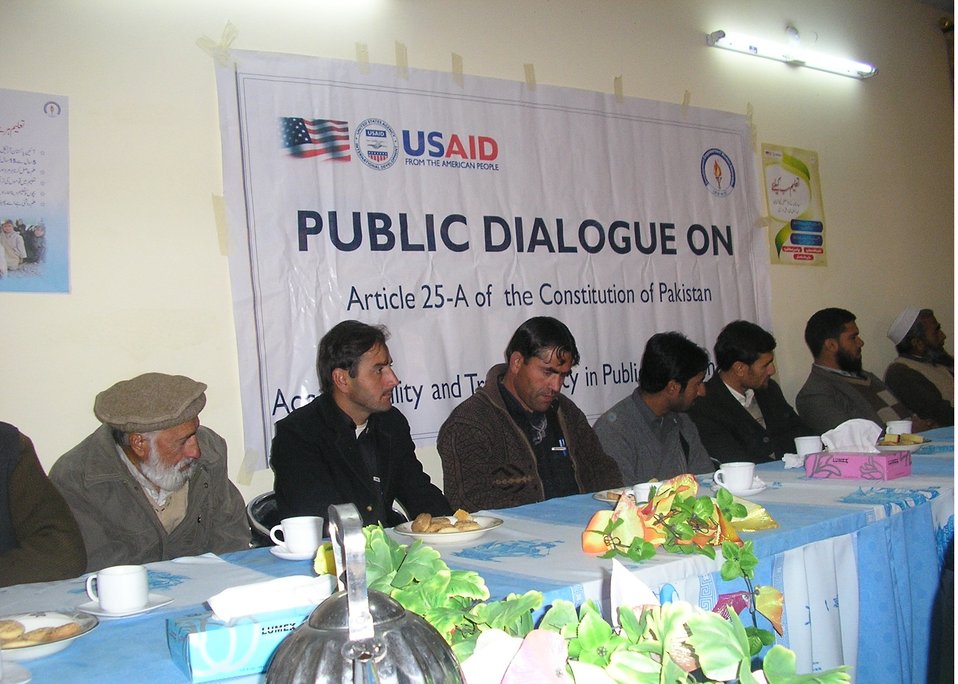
Caption 12 - DEWA - Dir KP - Public Dialogue on Right to Education

A view of local community members keenly listening to a fellow participant in the Public Dialogue Meeting on Article 25-A of the Constitution of Pakistan organized by DEWA. The article entitles every child from ages 5 to 16 to the right of free education. The meeting was part of an initiative on education sector reforms being implemented by DEWA under USAID’s Citizens’ Voice Project.